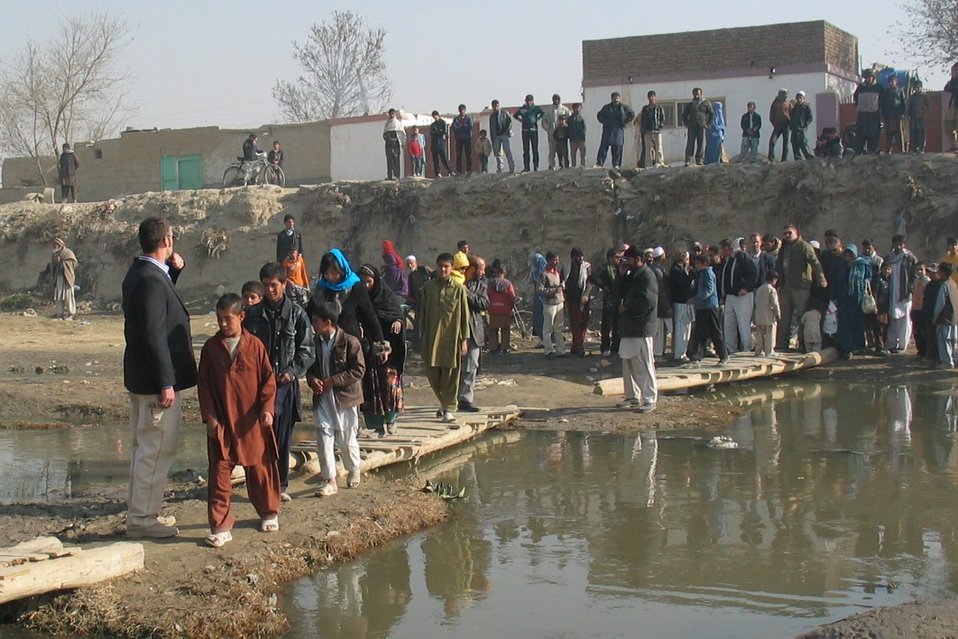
Kabul River Bridge Renovation, December 3, 2010